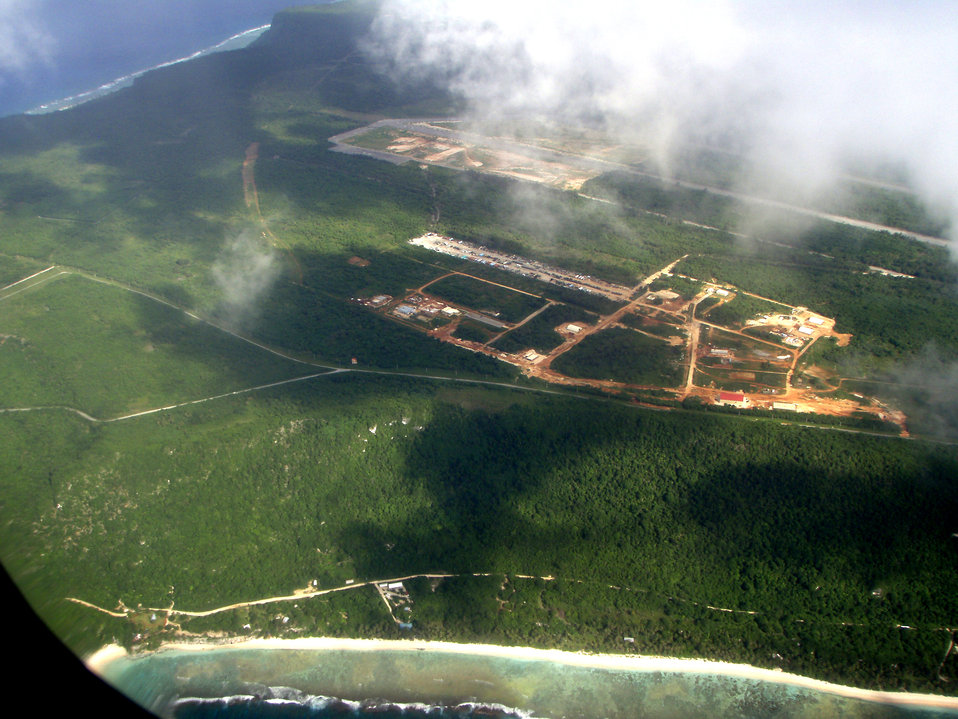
Northwest Field critical to training, ecosystem

An aerial view of Northwest Field at Andersen Air Force Base, Guam. Northwest Field is an important historical, cultural and ecological resource for Andersen AFB. In addition to a historical airfield used for training, it?s the location of the largest limestone forest on Guam, the natural habitat for several endangered bird species.